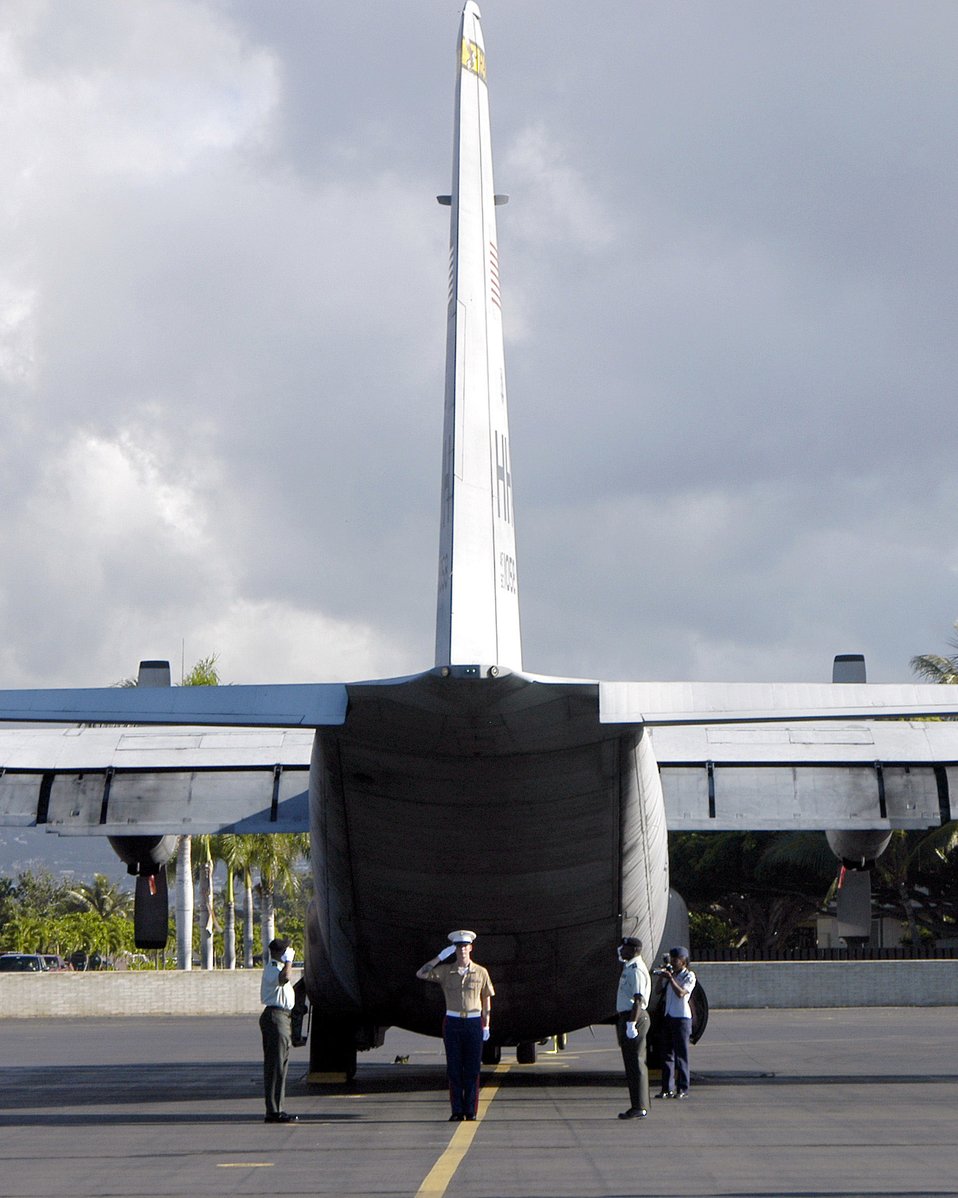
Coming home

HICKAM AIR FORCE BASE, Hawaii (AFPN) -- The Joint POW/MIA Accounting Command held a repatriation ceremony here Dec. 9. The ceremony was for a U.S. servicemember lost during the Vietnam War. The remains were recovered last month by a JPAC team. The JPAC's mission is to achieve the fullest possible accounting of all Americans missing as a result of the nation's previous conflicts.